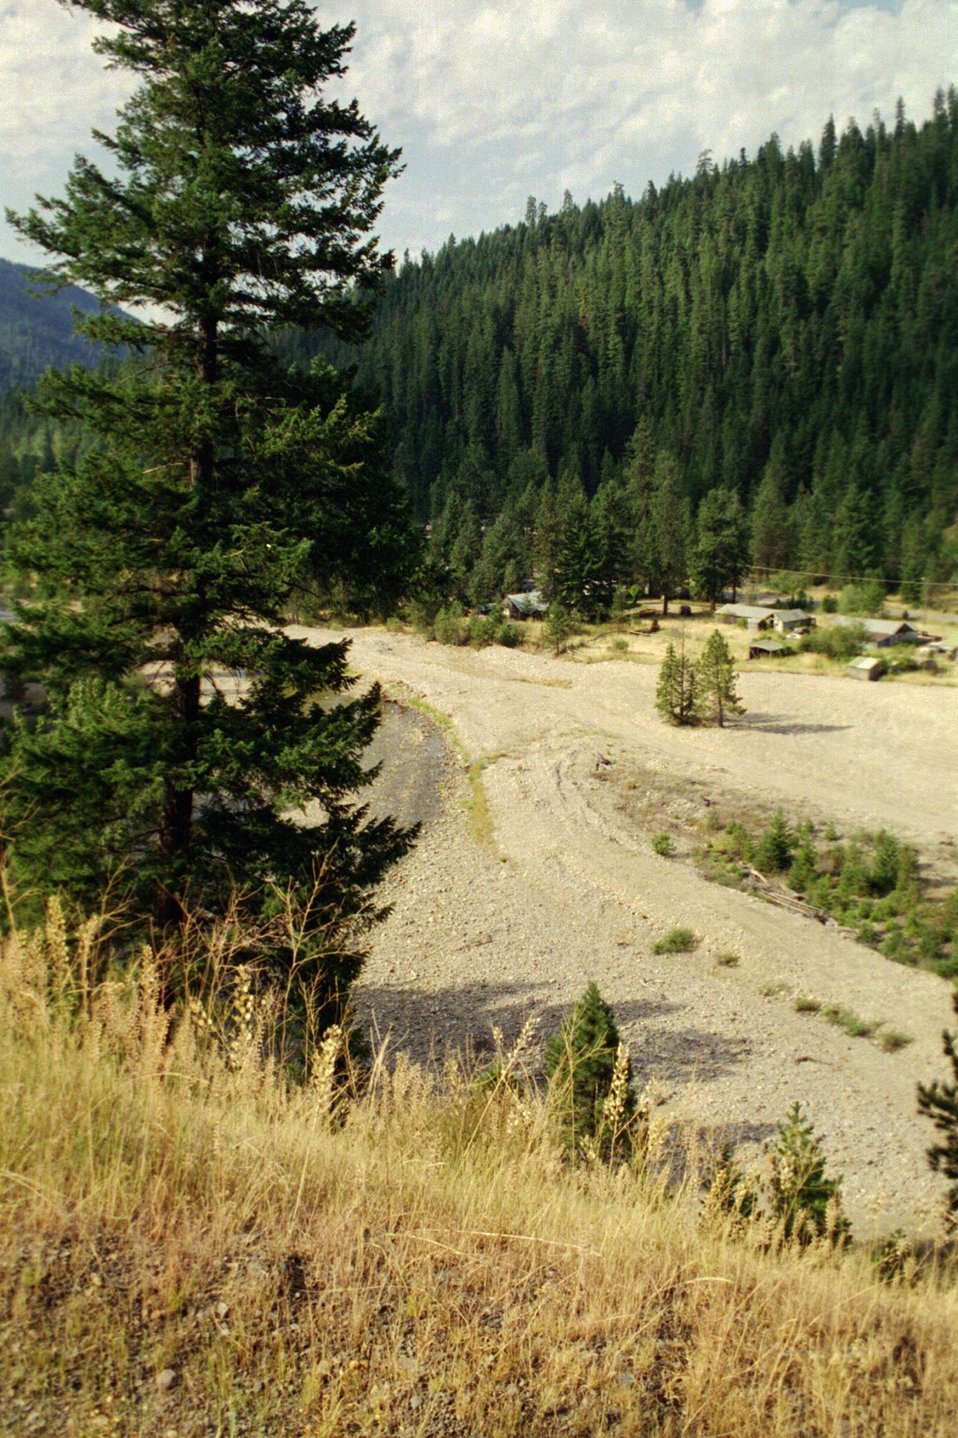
Riparian Area Stream Restoration from mining damage near Pinecreek Couer D'Alene Field Office UCSC Upper Columbia Salmon Clearwater District